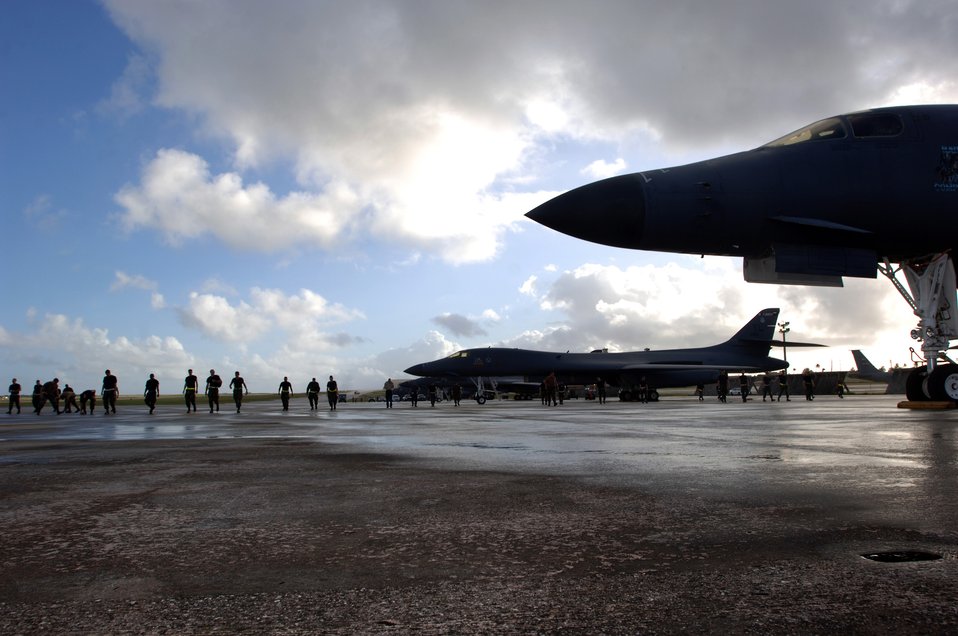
B-1B Lancers

ANDERSEN AIR FORCE BASE, Guam (AFPN) -- Airmen conduct a foreign object damage walk on the flightline before a morning sortie here. The Airmen, from the 28th Bomb Wing at Ellsworth Air Force Base, S.D., are here for an air expeditionary deployment. They provide the U.S. Pacific Command a continuous bomber presence in the Asia-Pacific region.